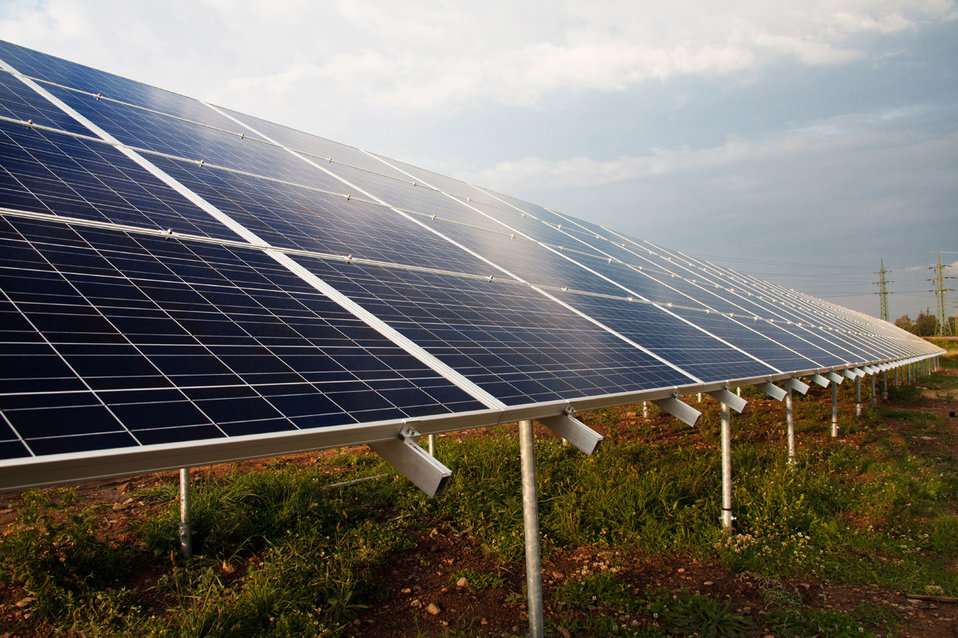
Photovoltaic power plant with transmission towers in the background.